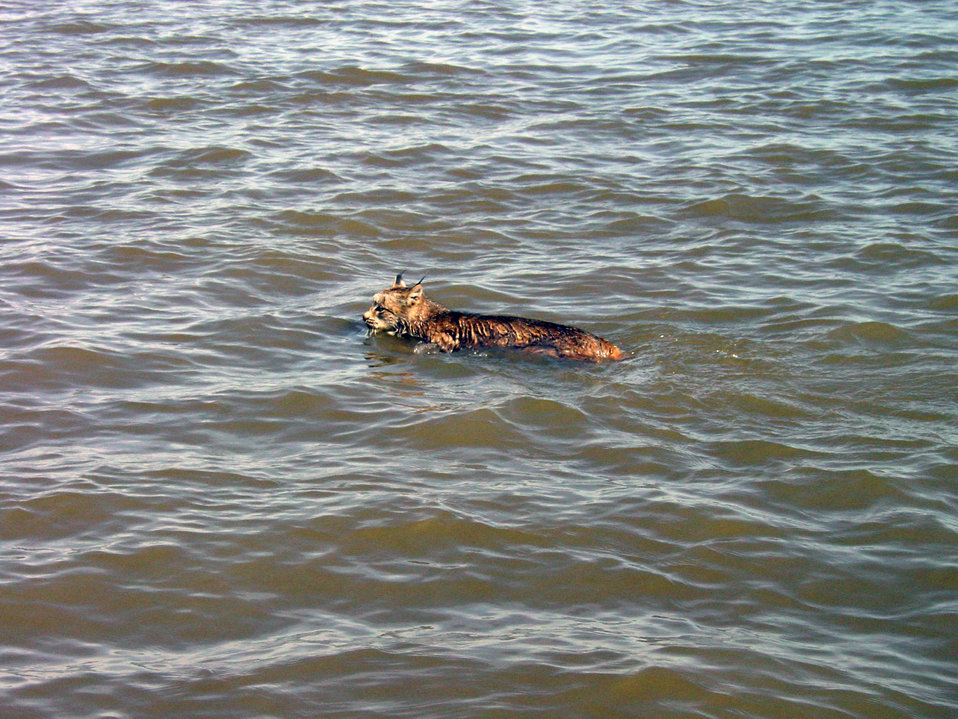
Lynx Crossing Kuskokwim River

The lynx (Lynx Canadensis) is the only cat native to Alaska. The lynx is a short-tailed cat, similar to the bobcat, but distinguished by its long legs, furry feet, long tufts on the tip of each ear, and a black-tipped tail. The large broad feet function as snowshoes to aid the lynx in winter hunting and traveling.

USFWS Yukon Delta NWR